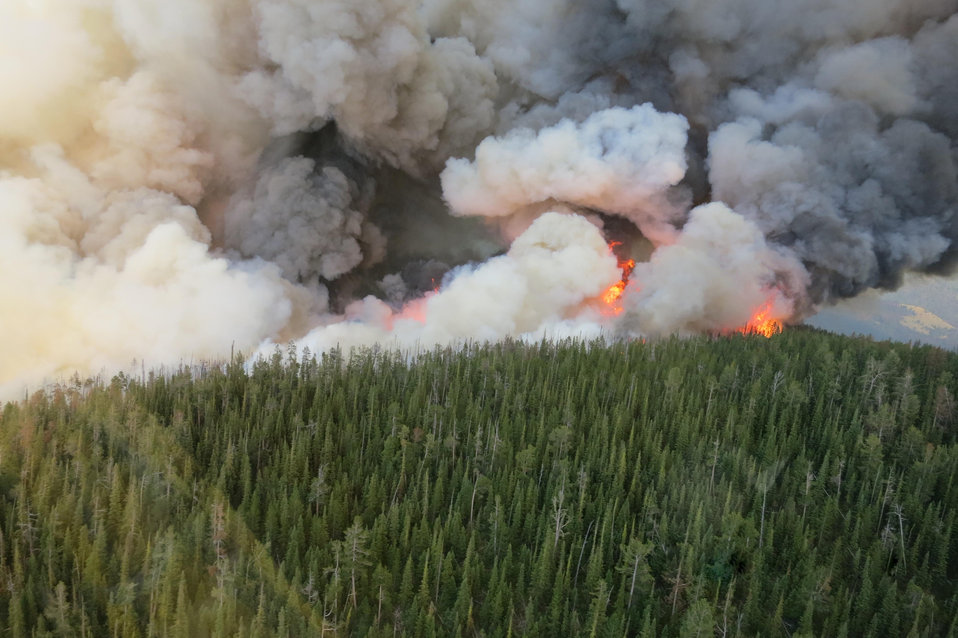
The Moose Meadow Fire in the Beaverhead-Deerlodge National Forest near Philipsbug, MT began on Jul. 25, 2013 by lightning has consumed approximately 3,400 acres and is approximately 30% contained.